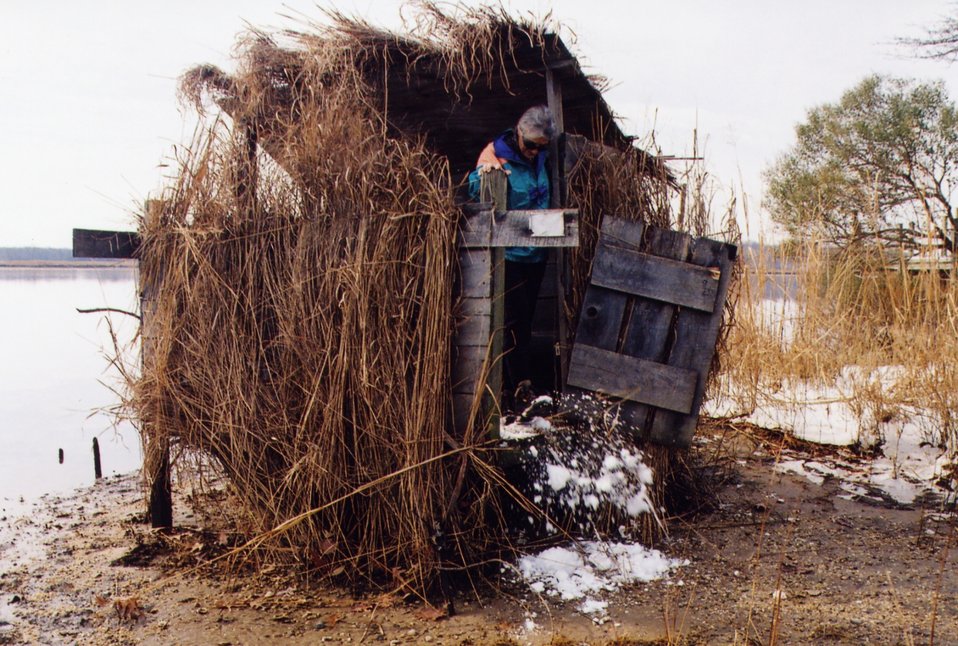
Patuxent River duck blind.